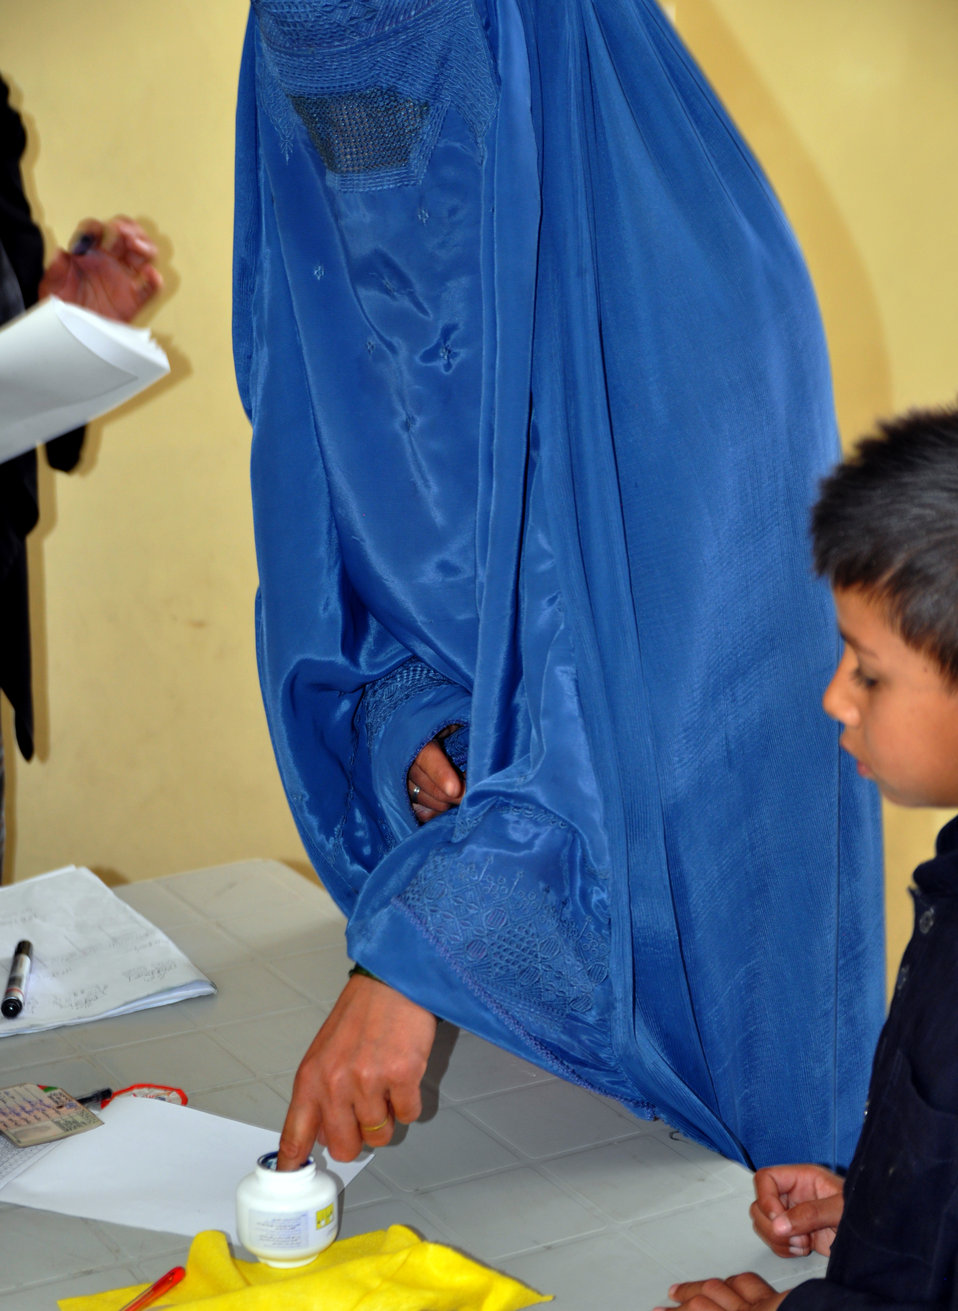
An Afghan woman wearing a burqa inks her finger at a polling center in Kabul.